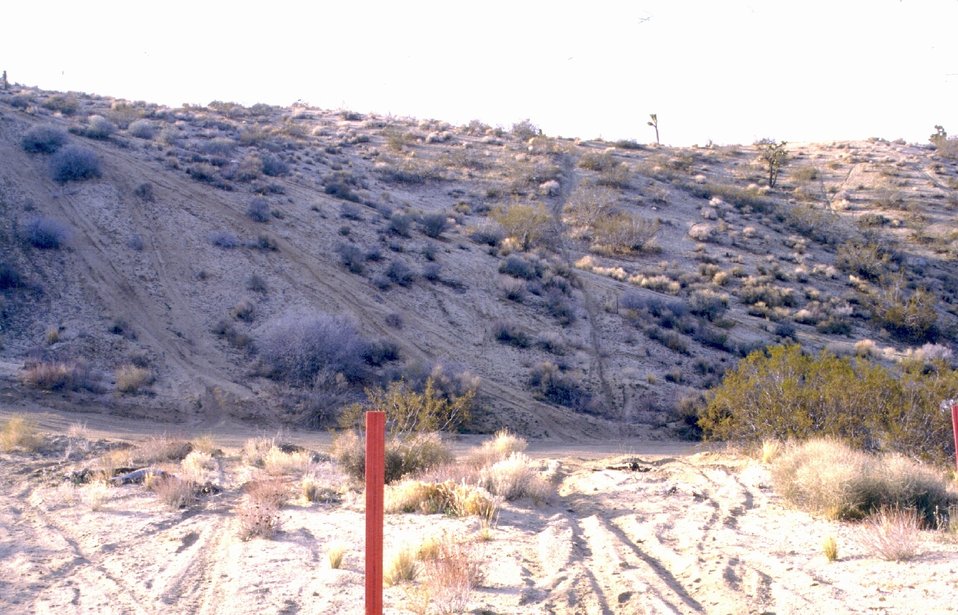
Goes with New-7 ongoing damage to hillsides caused by off route vehicle travel (trespass)